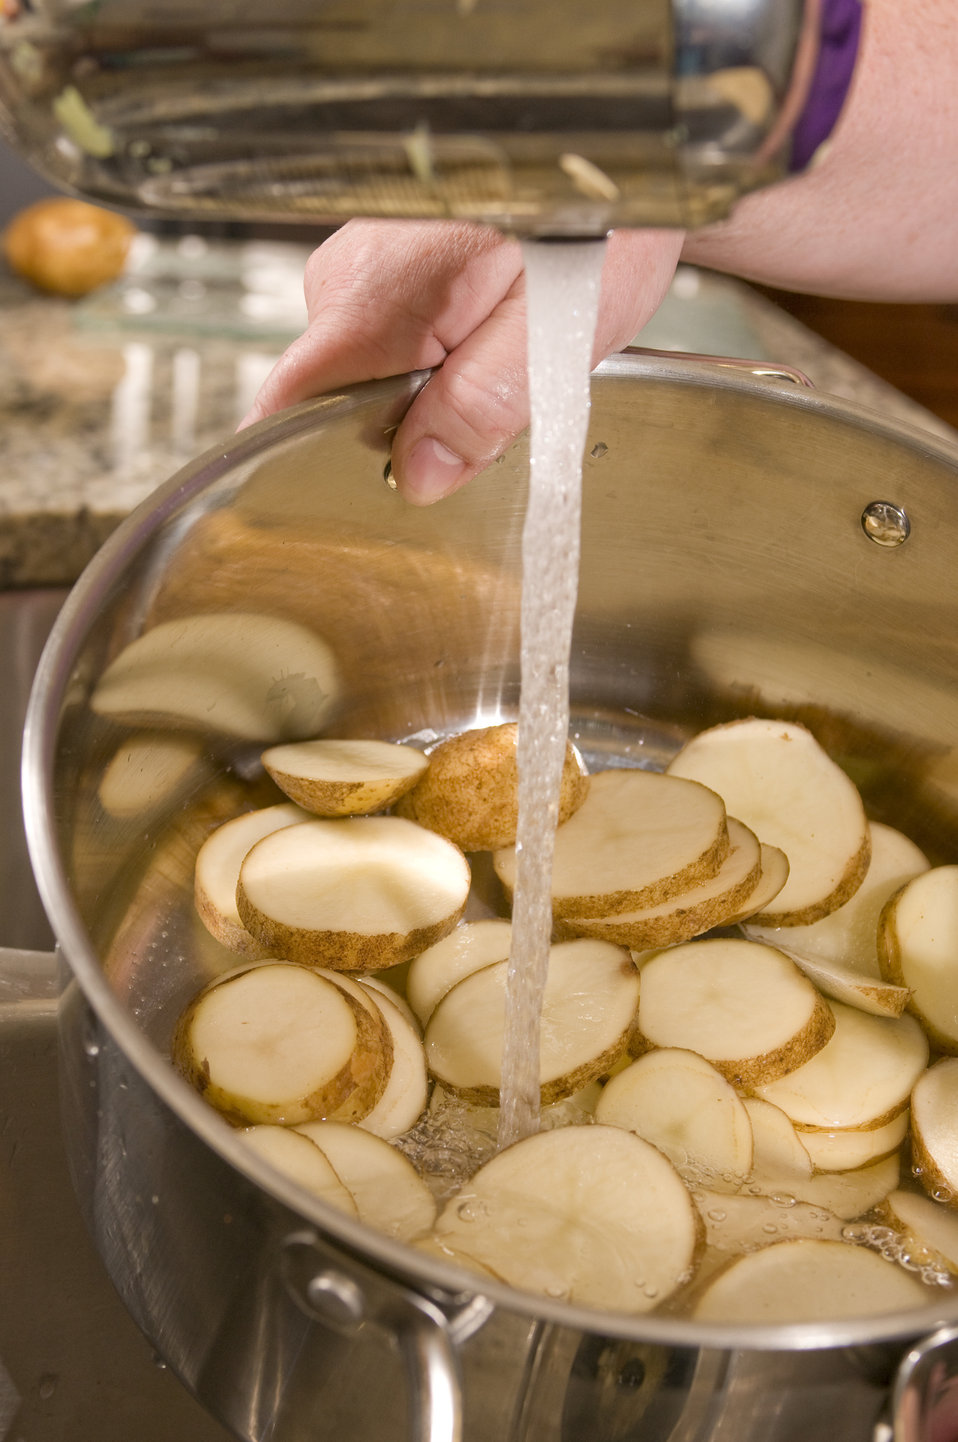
This photograph depicts a number of fresh-sliced white potato slices contained in a stainless steel cooking pot, to which was being added some fresh tap water. These potatoes had been prepared in this woman's clean food preparation area at her kitchen sink. It is very important to prepare foods in as clean environment as possible, thereby, minimizing the possibility of introducing foodborne contaminants into the food preparation process.